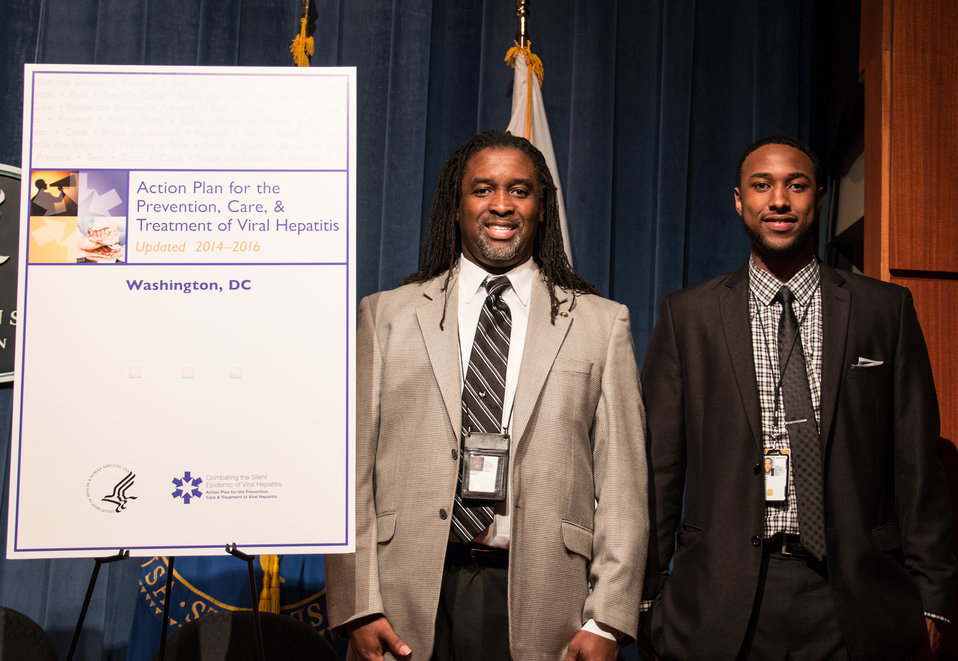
VHAP Launch (407 of 511)